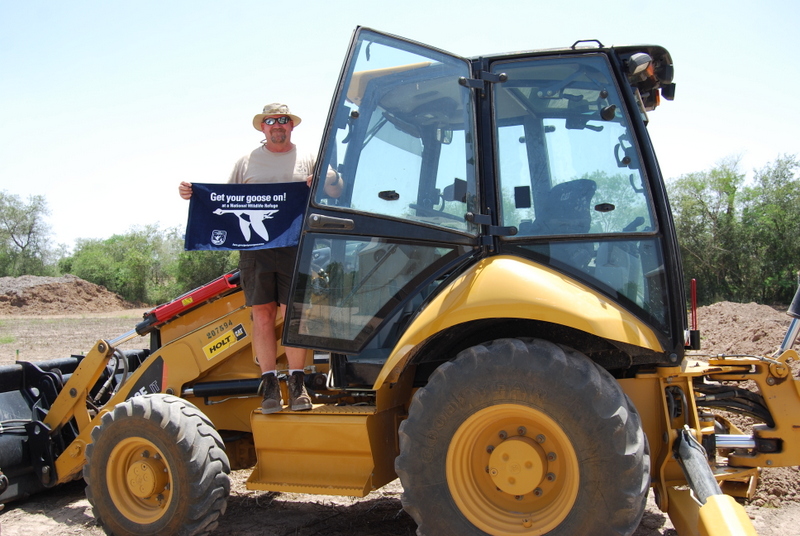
Get Your Goose On!

USFWS employee working on a trench at Lower Rio Grande Valley National Wildlife Refuge.